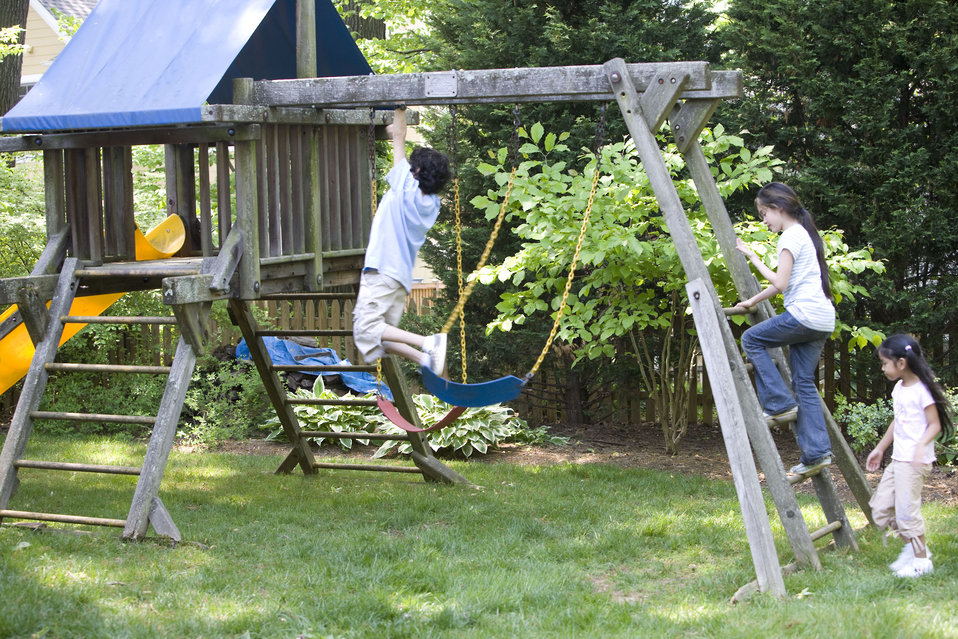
Children love playing outside, and these children were thoroughly enjoying their wooden swing set, and all were having fun in the fresh outdoor air, and the beautiful weather. It's important to note that older wooden playsets may have been treated with arsenic and/or creosote, and therefore, parents need to know if these chemicals were used in their manufacture.